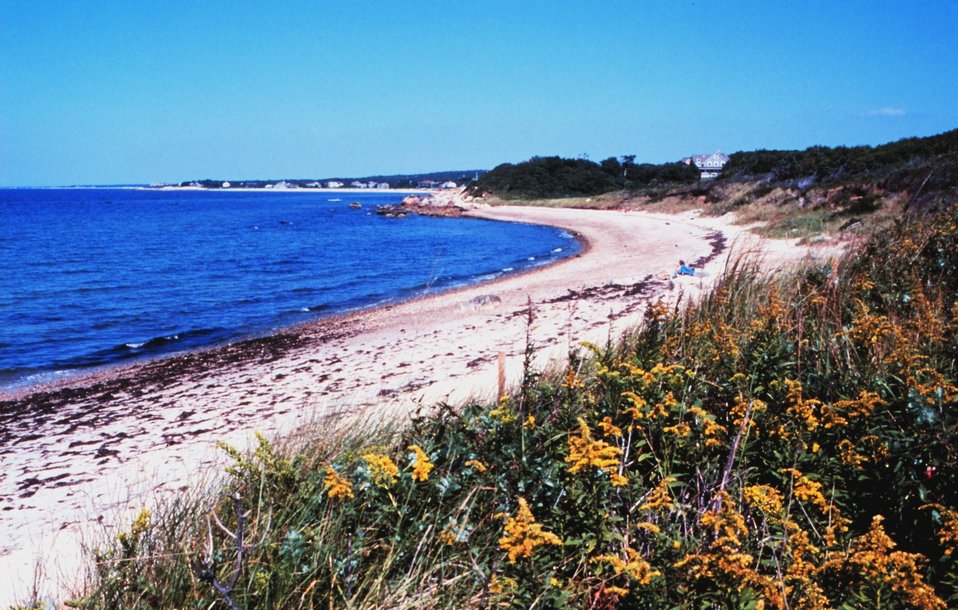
Buzzards Bay, Woods Hole